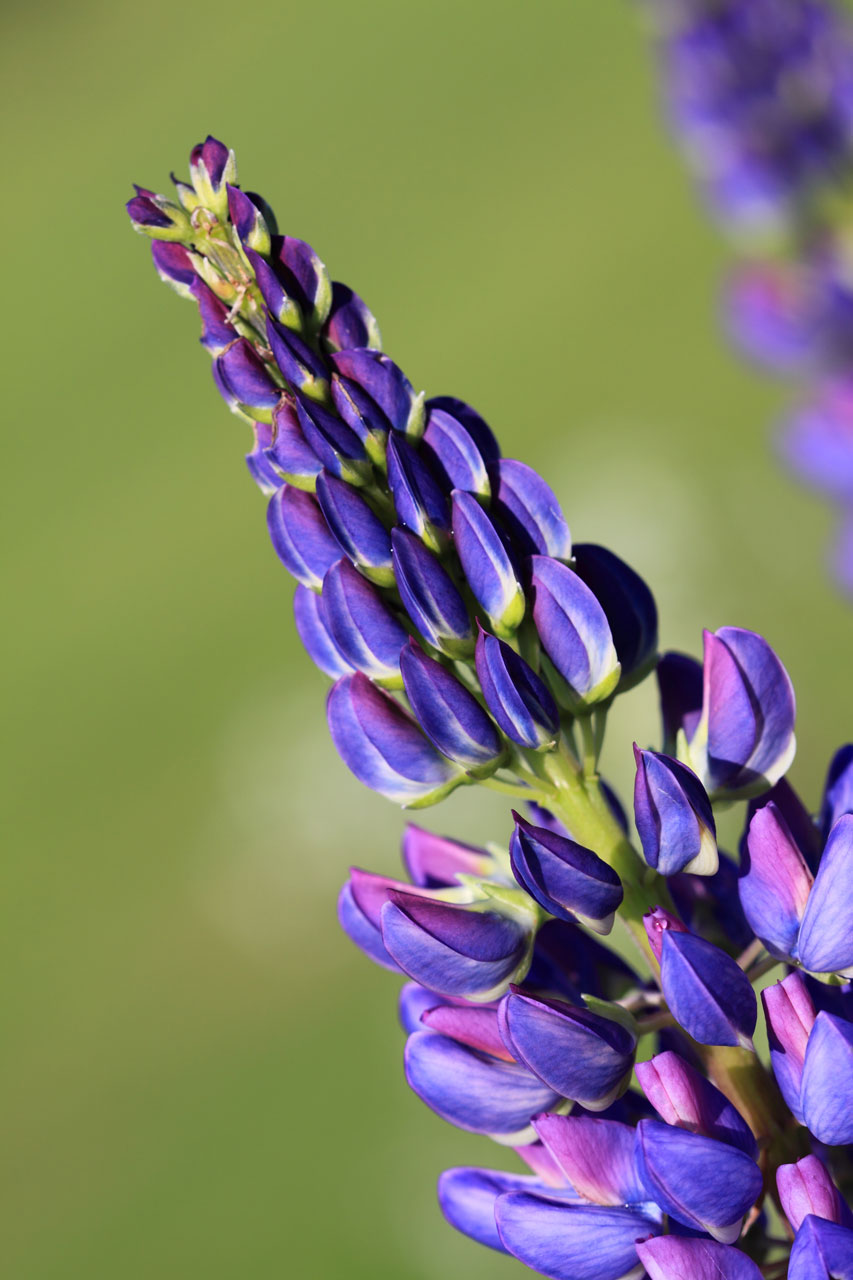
Purple lupin

Detail of purple lupin.